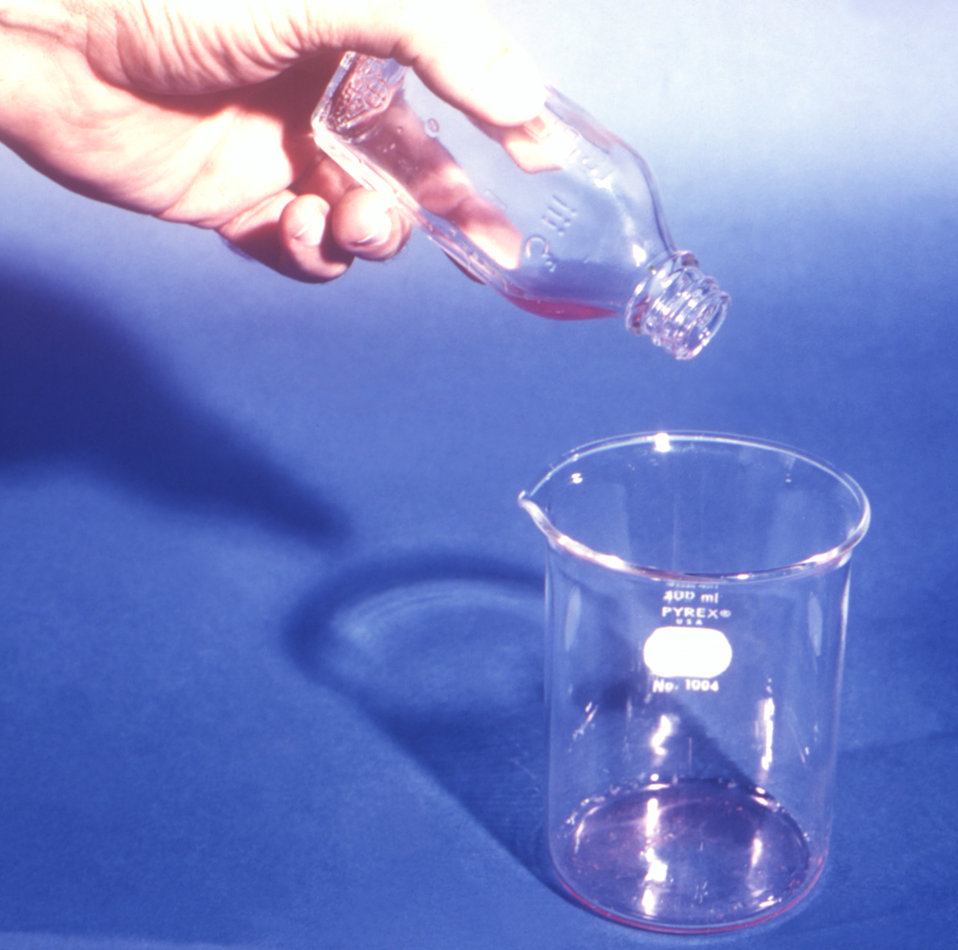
This image depicts one of the steps involved in the process to reconstitute frozen cell cultures. In this particular step, the technician was holding a cell culture vial that had been turned so that its contents, consisting of a pink-colored fluid, was being poured into a standard 100ml Pyrex beaker.